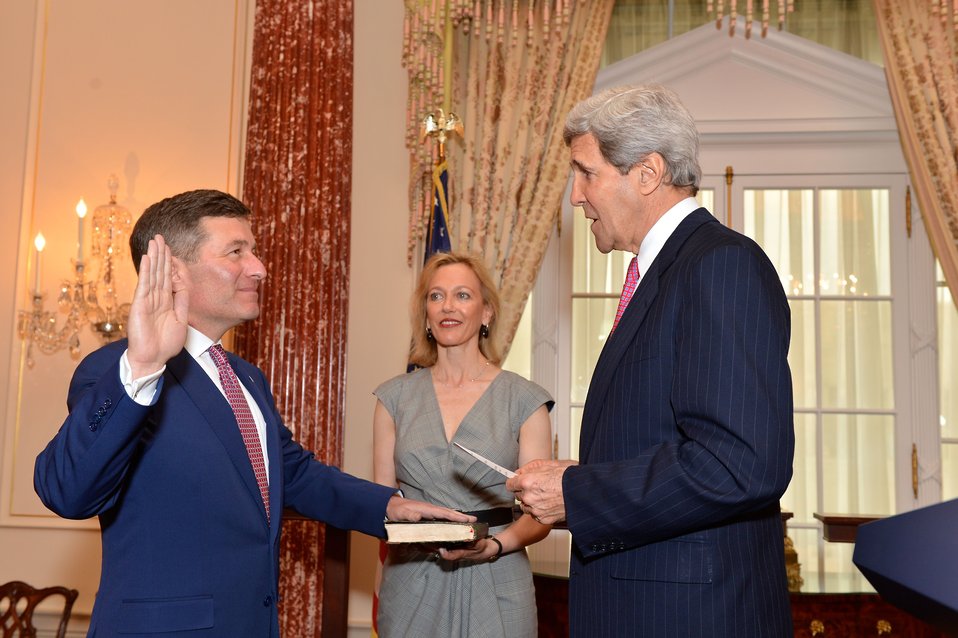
Secretary Kerry Swears in Ambassador Rivkin as Assistant Secretary

With his wife, Susan Tolson, looking on, U.S. Secretary of State John Kerry swears in Ambassador Charles Rivkin as Assistant Secretary for Economic and Business Affairs at the U.S. Department of State in Washington, D.C., on April 15, 2014.